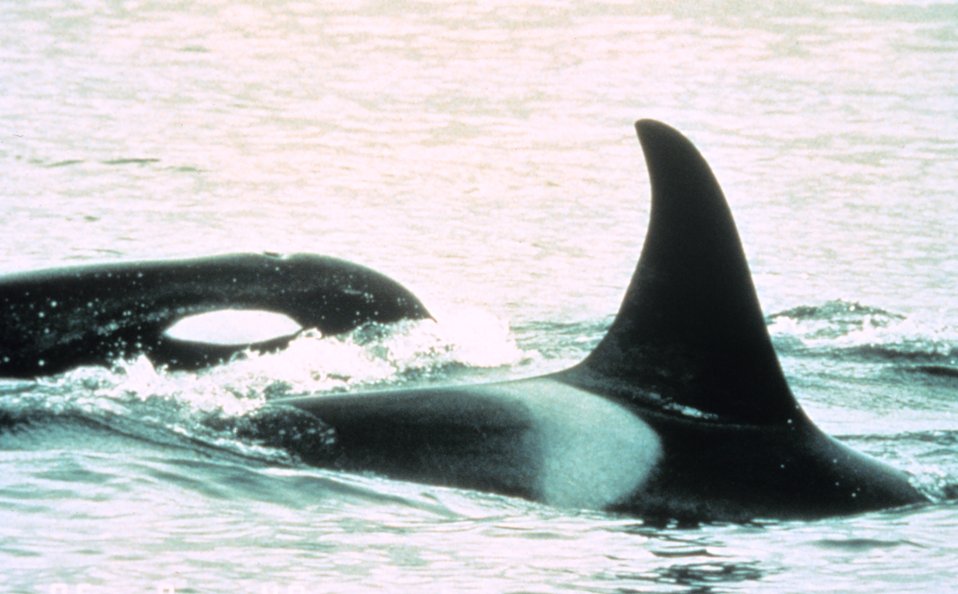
Killer whales